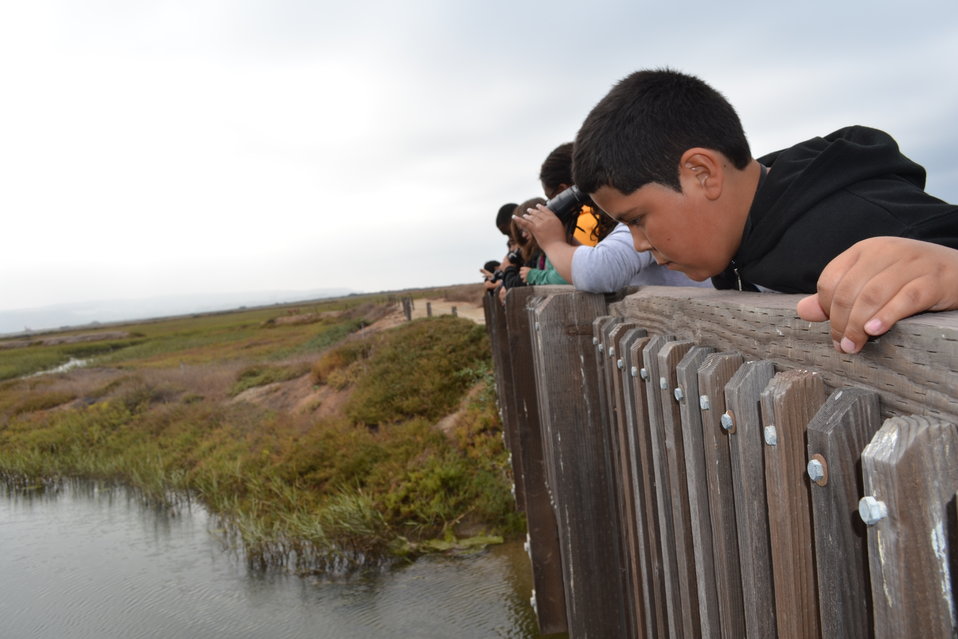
Looking for creatures in the marsh

Fifth and Sixth grade Students from a local elementary school peer over the McCoy Trail bridge to look for fiddler crabs, or perhaps a glimpse of a Light-footed clapper rail